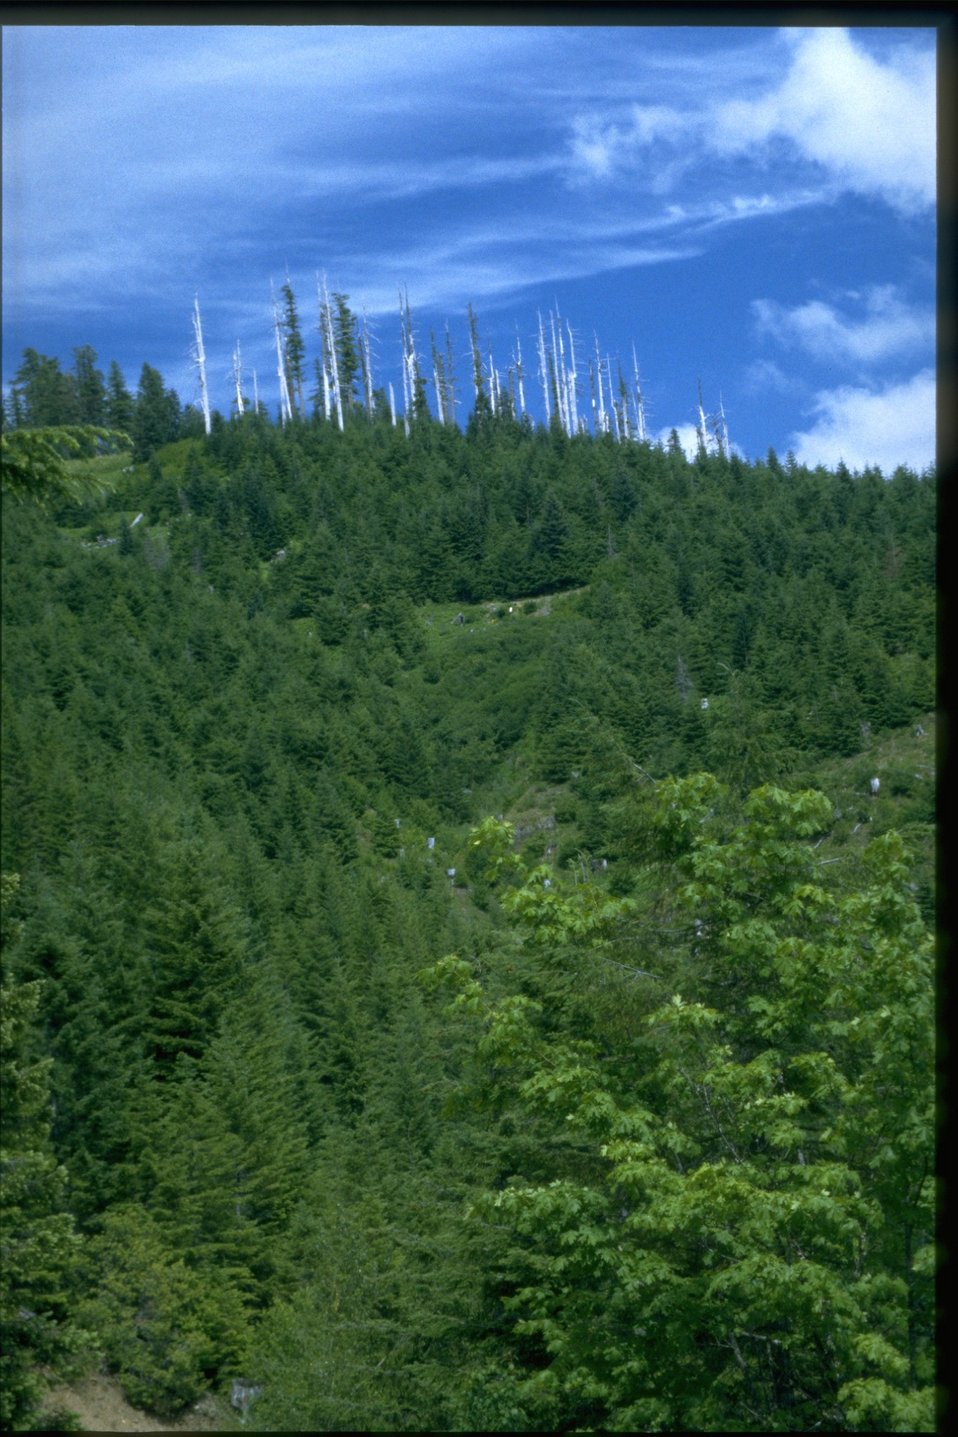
Scenic view from Mt. Horeb.